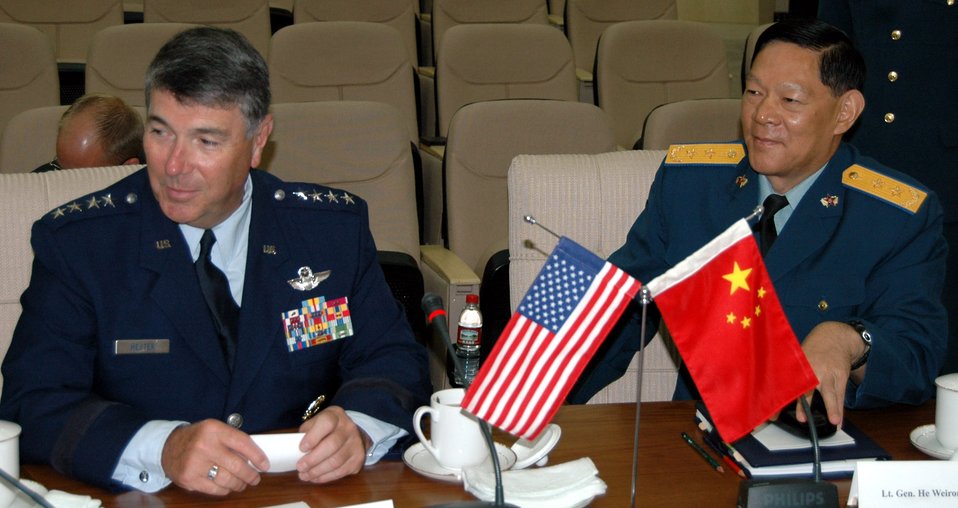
Chinese military hosts PACAF commander

Gen. Paul V. Hester and Chinese Lt. Gen. He Weirong await to receive the People's Liberation Army Air Force mission briefing July 24 in Beijing. General Hester is the commander of Pacific Air Forces, and General Weirong is the deputy commander of the People's Liberation Army Air Force.